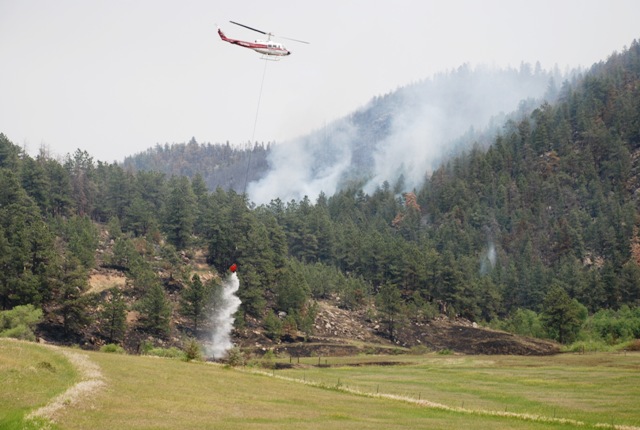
Helicopters offer critical fire support against the High Park Wildfire on the Arapaho and Roosevelt National Forests and Pawnee National Grassland on Thursday, June 10, 2012. The High Park Wildfire located approximately 15 miles west of Fort Collins, CO has consumed over 65,738 acres of forest and grassland with approximately 189 homes destroyed. Over 1,773 personnel from the U.S. Forest Service (FS), state and local resources are fighting the wildfire and have achieved 55% containment as of June 20, 2012. The High Park Wildfire began on June 9. 2012 because of a lightening strike on private land.